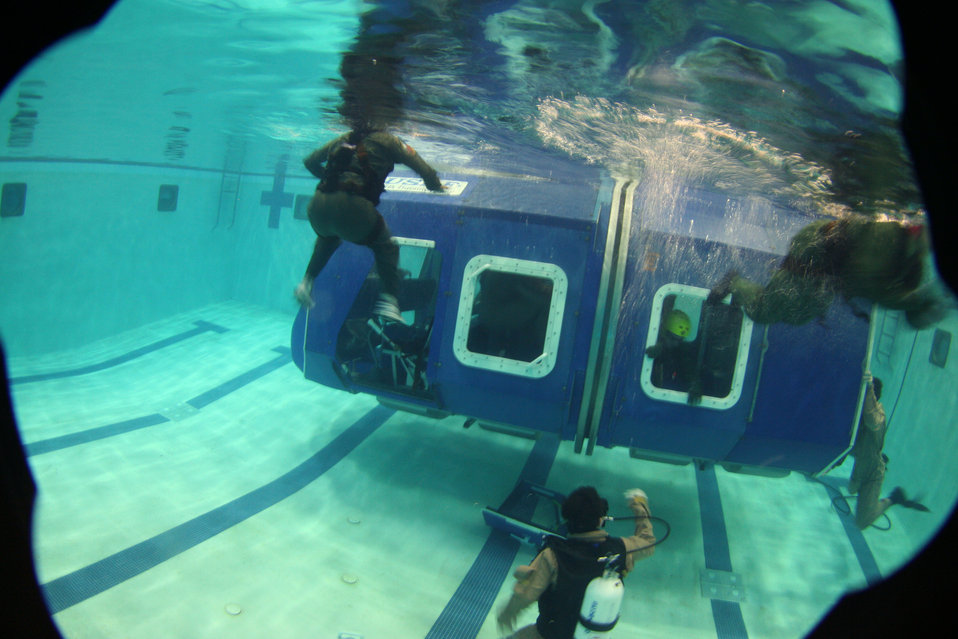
Water survival course moves from Florida to Fairchild

Water survival course students escape from a simulated downed aircraft in a pool June 9,2010, at Fairchild Air Force Base, Wash. The instructors monitor the exercise, ensuring the students get the required training they need, while staying safe. Students must pass through the water survival course before filling an aircrew position. Seven instructors are on hand to ensure students are safe at all times. The 22nd Training Squadron trains more than 60,000 Airmen per year.